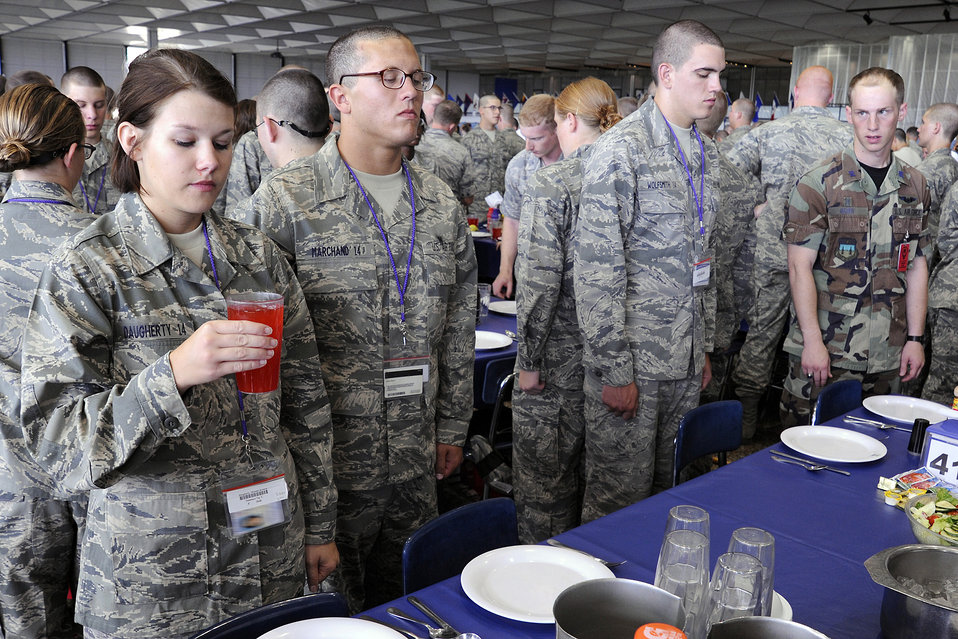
New Academy cadets learn dining 'traditions'

Basic cadet Melanie Daugherty learns meal procedures under the watchful eye of Cadet 2nd Class Richard Mazen during the first day of basic cadet training at the U.S. Air Force Academy, Colo., June 25, 2010.